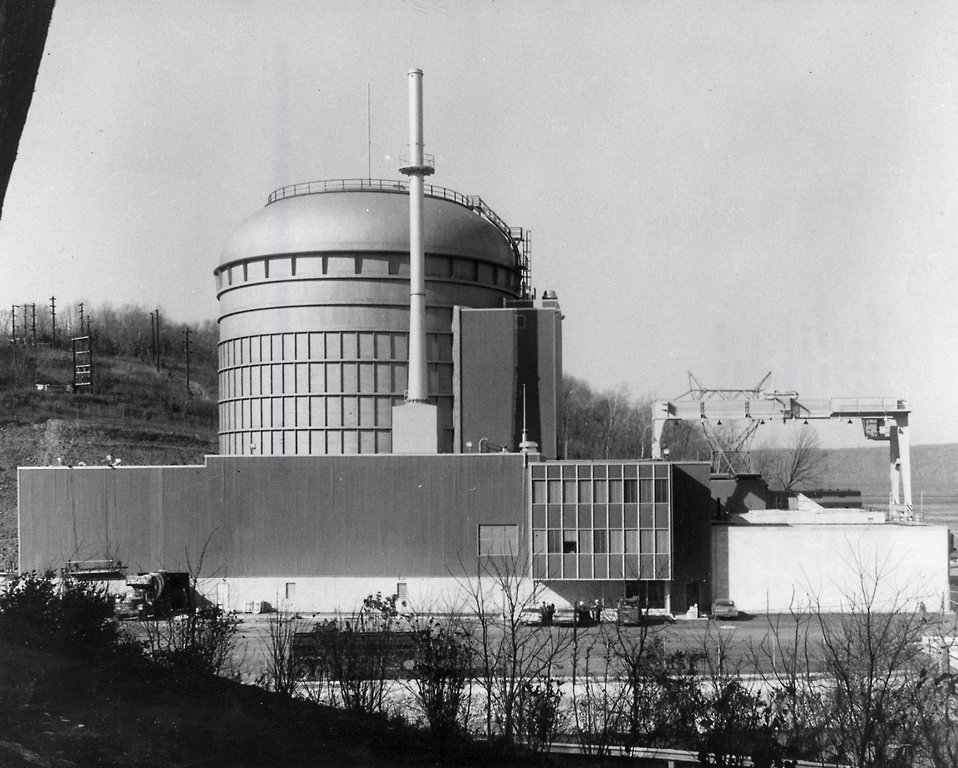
Construction of the Philadelphia Electric Company's prototype high-temperature gas-cooled reactor at Peach Bottom, Pennsylvania, was completed late in 1964 and reactor start up was scheduled for early 1965. Circa 1965.